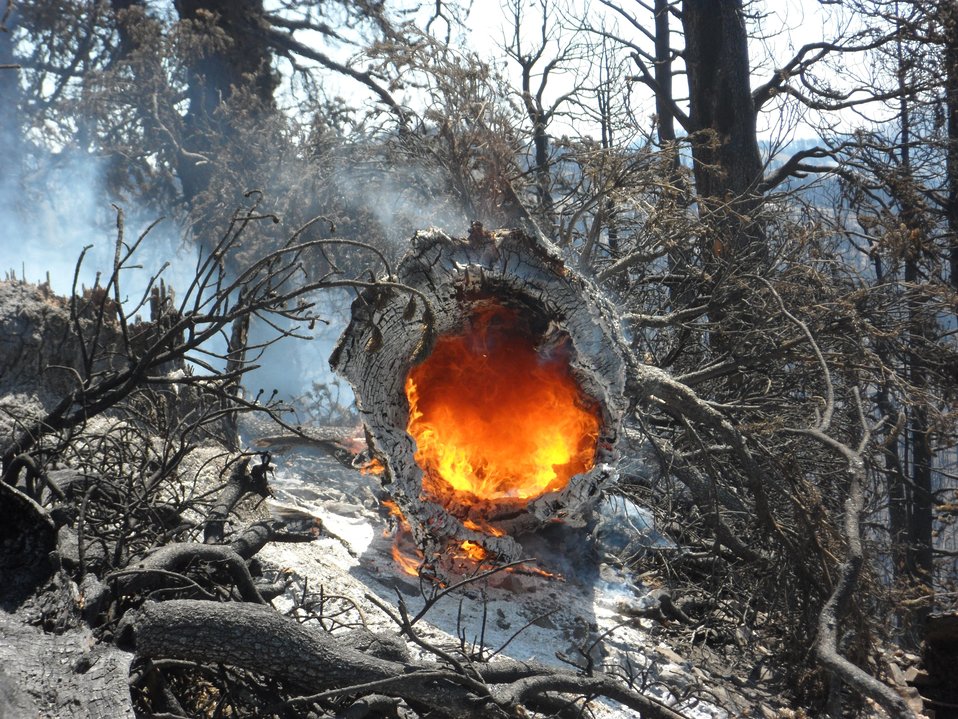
A stump burns at the Carpenter Fire on Jul. 19, 2013. The Carpenter Fire in the Toiyabe National Forest near Humboldt, NV was caused by a lightning strike on Jul. 1, 2013. The fire has consumed nearly 27,881acres and is presently 95% contained.